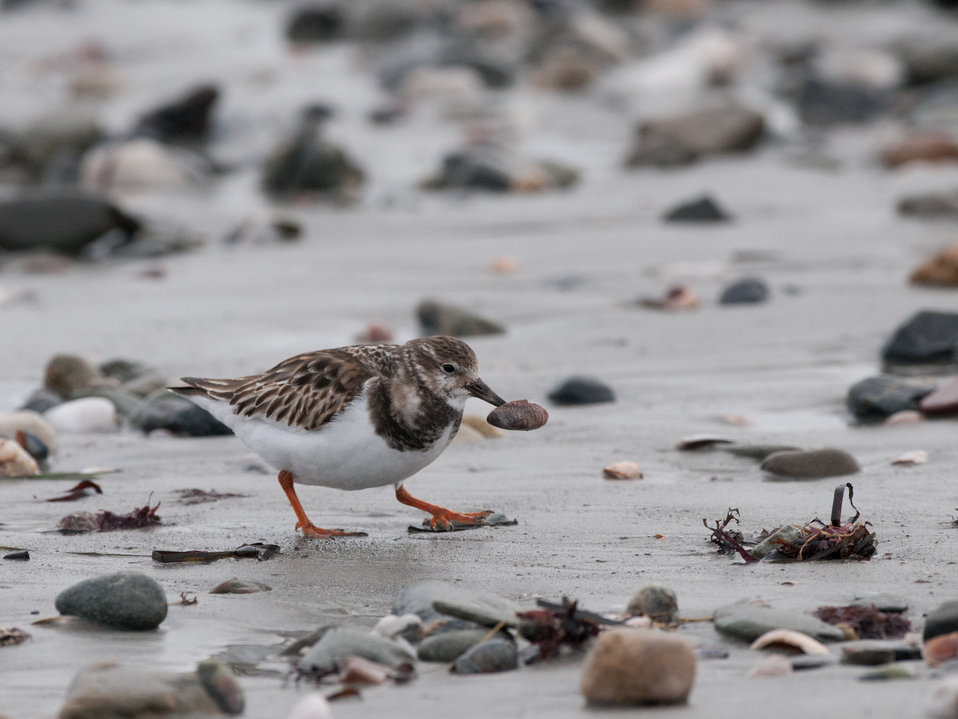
Ruddy Turnstone Feeding

Photographed at Sachuest Point National Wildlife Refuge.